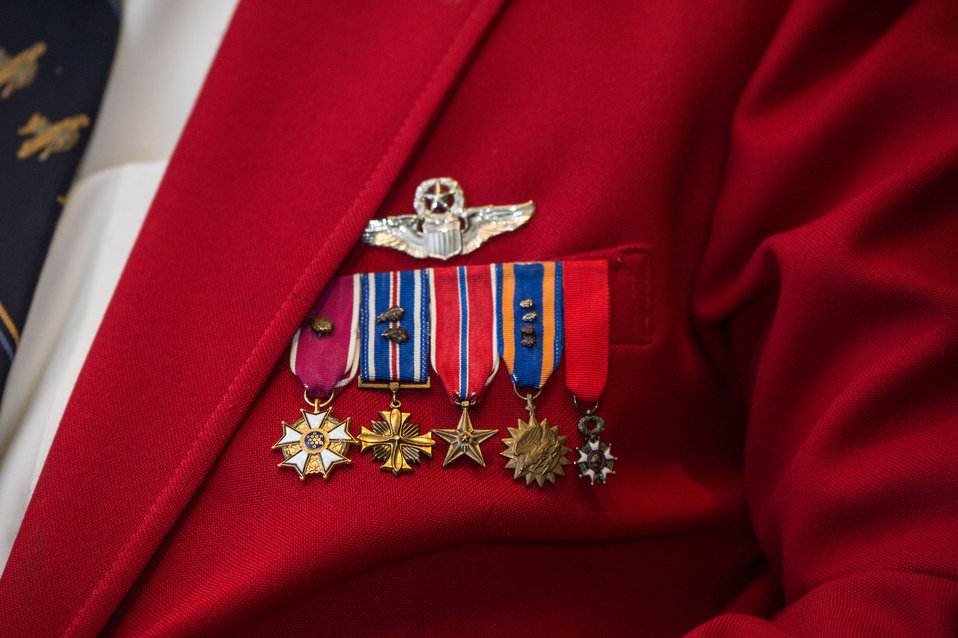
Ribbons worn on the red jackets of Tuskeegee airmen Retired U.S. Air Force (USAF) Pilot Colonel Charles Edward McGee and Tuskegee Airmen Incorporated (TAI) National Historian William F. Holton at the U.S. Department of Agriculture (USDA) Office of the Assistant Secretary for Civil Rights (OASCR) event “In conversation With Tuskegee Airmen” to honor the airmen’s successes both overseas and at home at USDA in Washington, D.C. on Thursday Mar. 27, 2014. Col. McGee recounted his experiences in the Army Air Corp (later Army Air Force and Air Force) starting in the 1940’s and Mr. Holton spoke about his experiences in the the U.S. Navy. Questions from the audience provided several opportunities to open the discussion about civil rights challenges and how they achieved success and respect.